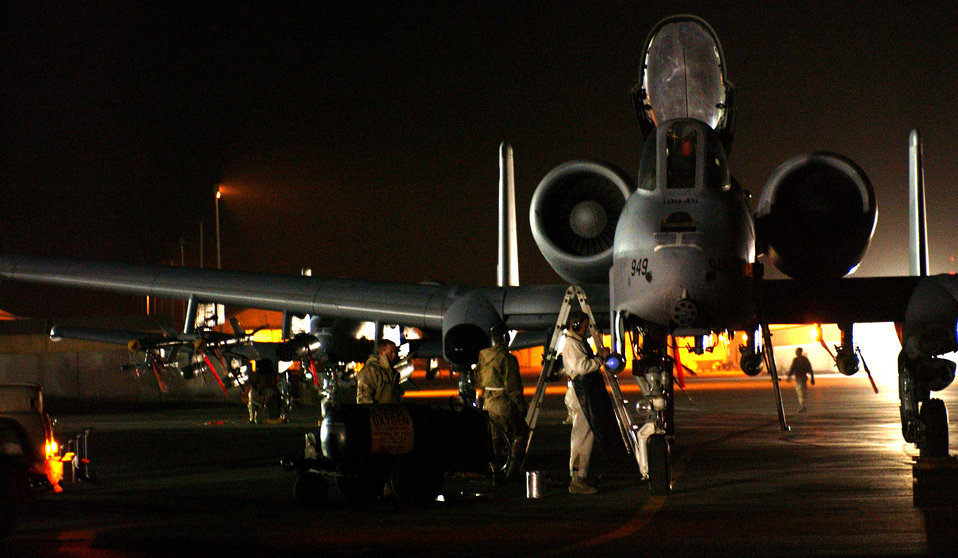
Warthog

OPERATION IRAQI FREEDOM -- Maintenance troops work on an A-10 Thunderbolt II on March 23 at a forward-deployed Operation Iraqi Freedom location. The tank-killing A-10 is affectionately known as the Warthog.